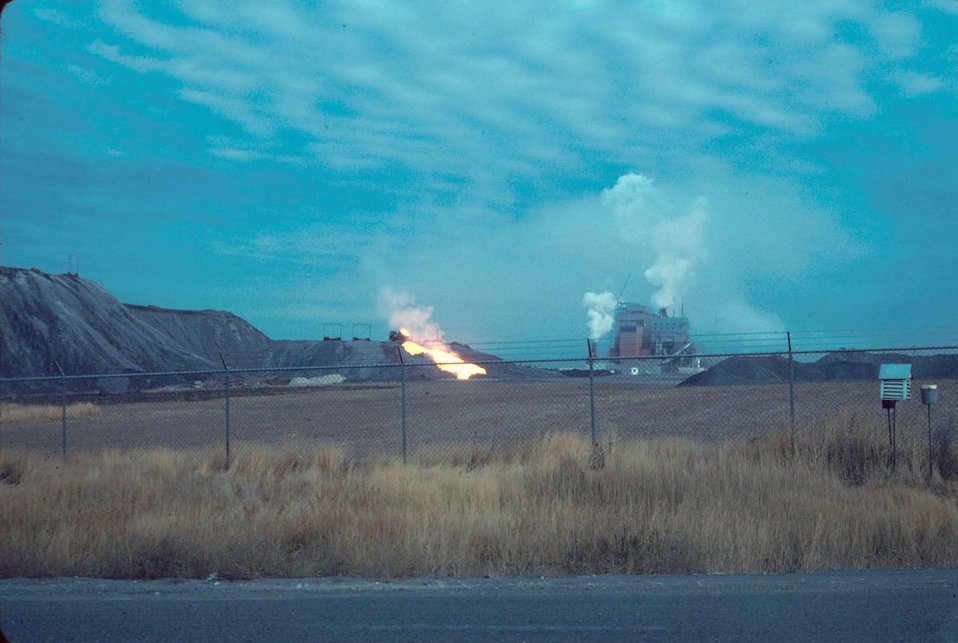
Monsanto Phosphate Plant Soda Springs Pocatello Field Office USRD Upper Snake River District